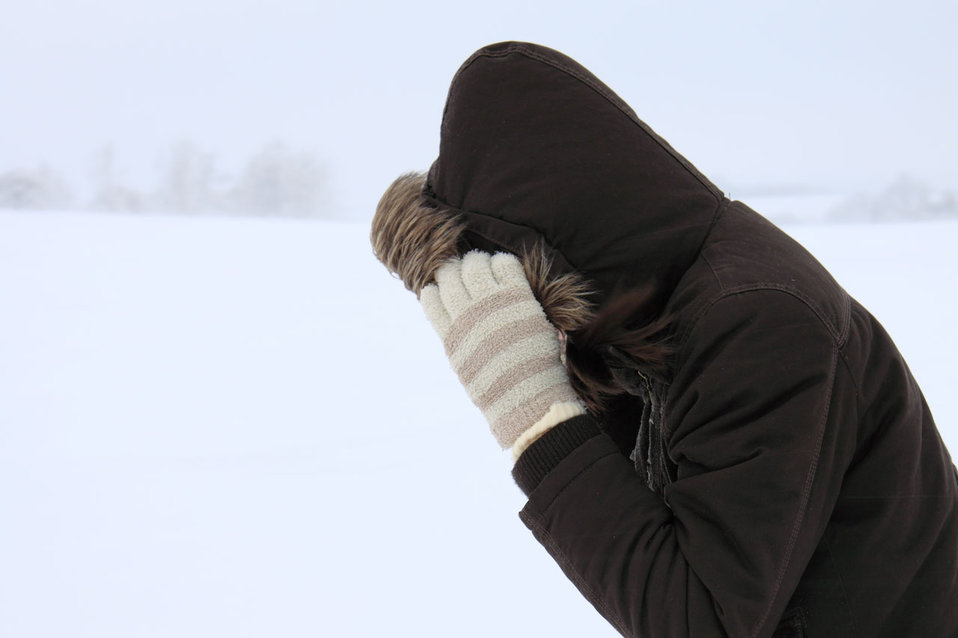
Walking in blizzard

Difficult walk in snow blizzard.